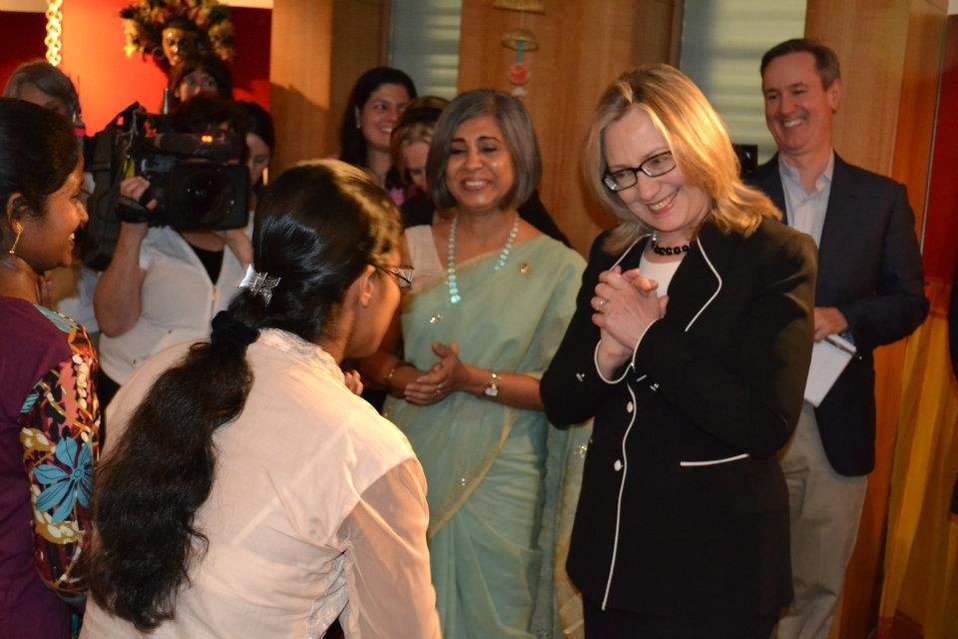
Secretary Clinton Attends the Anti-Trafficking Champions Event

U.S. Secretary of State Hillary Rodham Clinton attends the Anti-Trafficking Champions Event in Kolkata, India, on May 6, 2012.